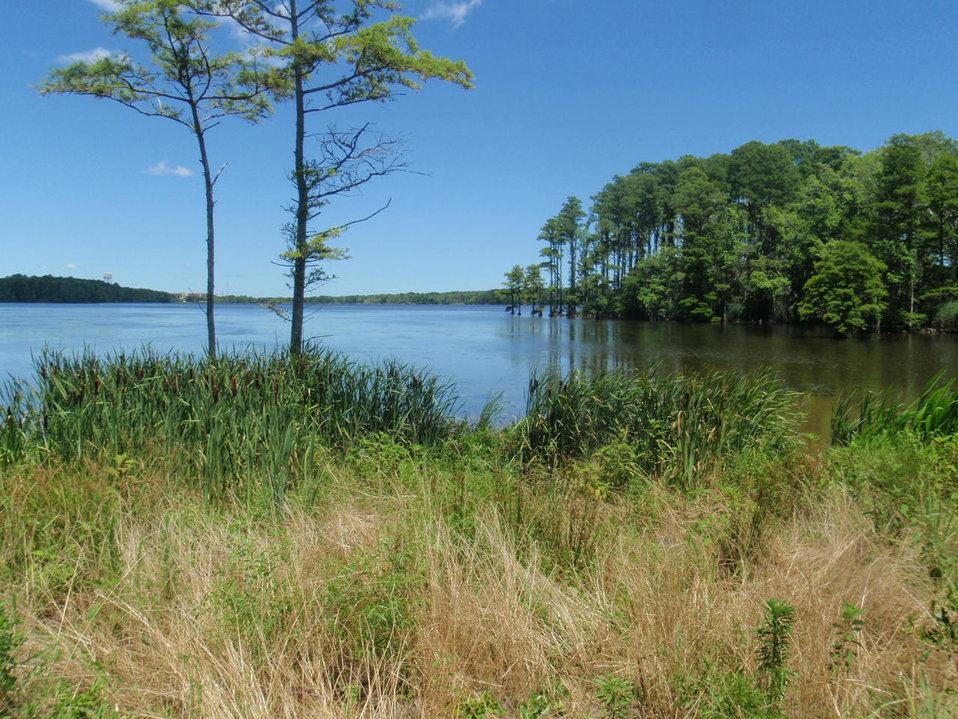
Lake Tecumseh in July 2012, 1.5 years after habitat restoration activities were completed.